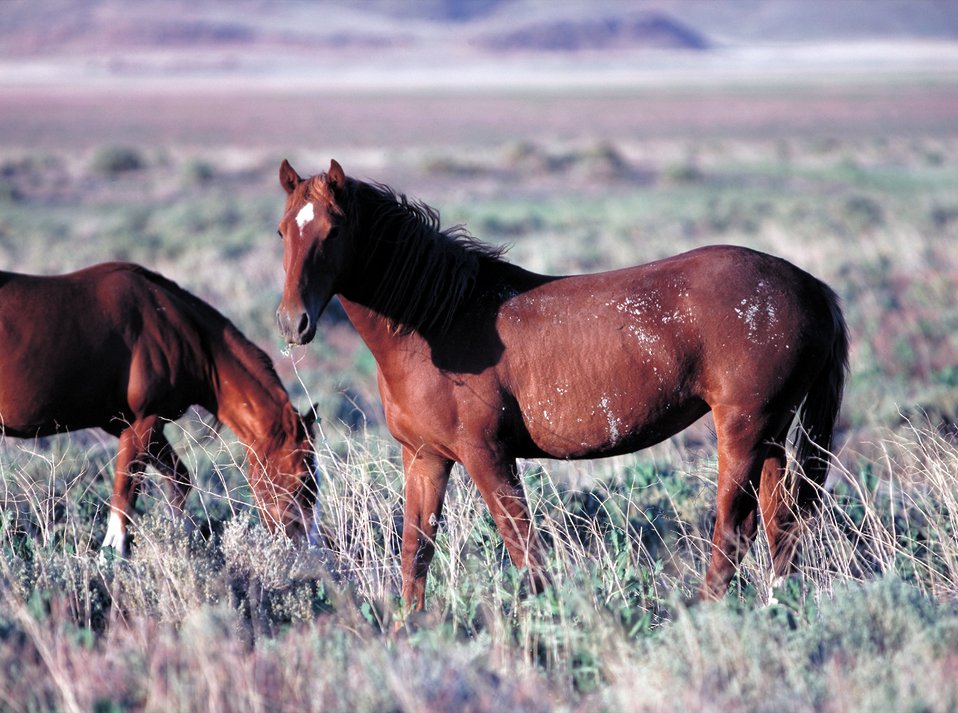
Onaqui Herd near Dugway, Utah.